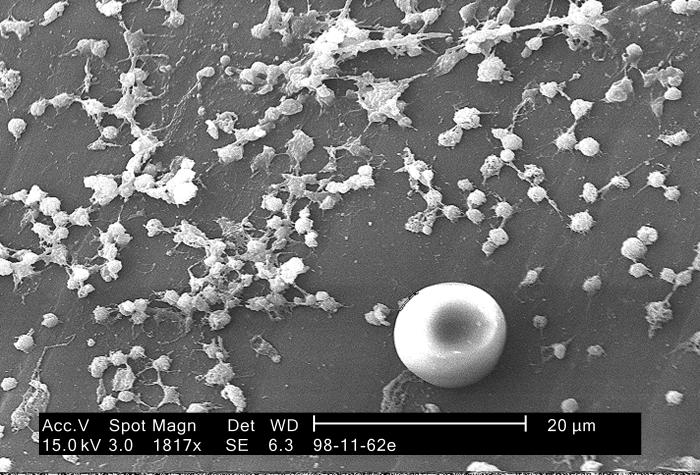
This electron micrograph depicted numbers of Staphylococcus aureus bacteria, which were fond on the luminal surface of an indwelling catheter. A red blood cell (RBD), also known as an 'erythrocyte' is present with its biconcave cytomorphology. Of importance is the sticky-looking substance woven between the round cocci bacteria, which was composed of polysaccharides, and is known as 'biofilm'. This biofilm has been found to protect the bacteria that secrete the substance from attacks by antimicrobial agents such as antibiotics; Magnified 2363x.S. aureus, often referred to simply as "staph," are bacteria commonly carried on the skin, or in the nose of healthy people. Approximately 25% to 30% of the population is colonized, i.e., when bacteria are present, but not causing an infection, in the nose with staph bacteria.